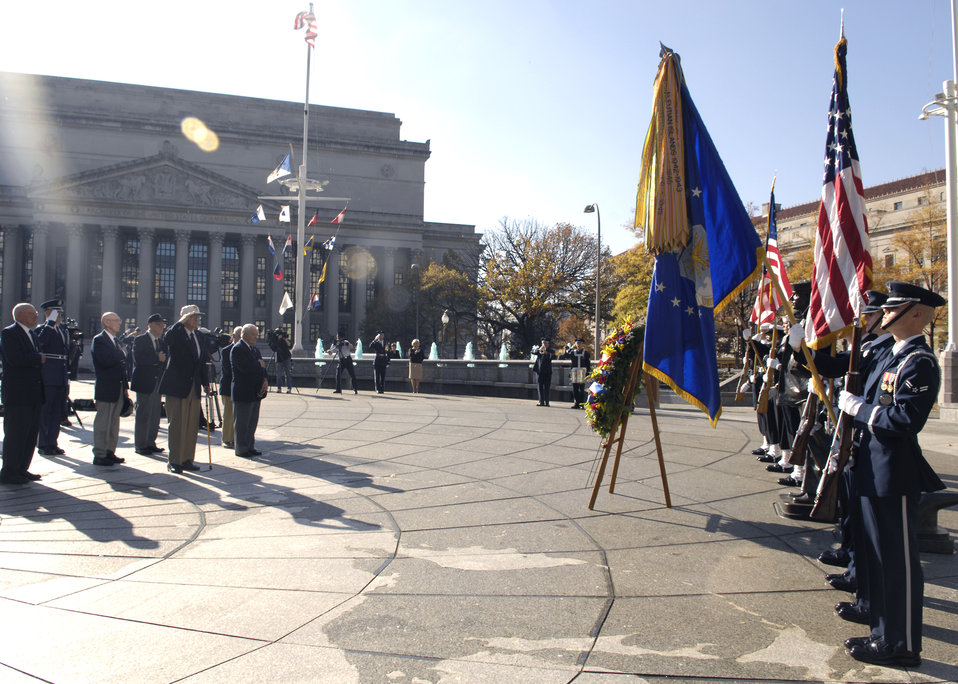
Doolittle Raiders visit Washington Airmen, memorials

Six members of the Doolittle Raiders attend the wreath laying ceremony in honor of the USS Hornet at the Navy Memorial in Washington Nov. 9. On April 18, 1942, the Doolittle Raiders, led by then Lt. Col. Jimmy Doolittle, became the first to bombard Japan following the attack on Pearl Harbor. The Doolittle Raiders have celebrated their victory for the past 64 years.